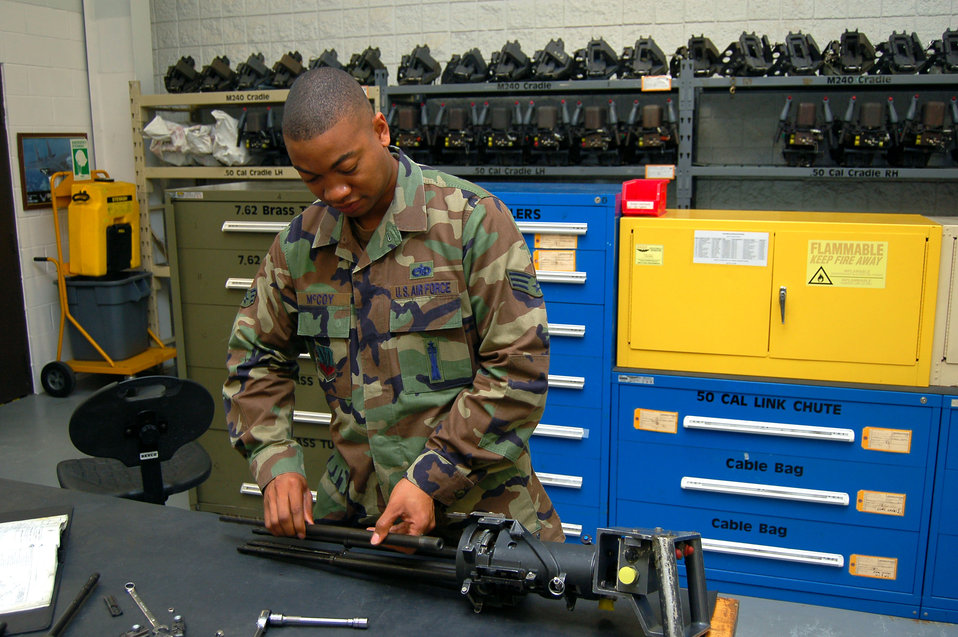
'Abort Court' gets to bottom of mission scrubs

Senior Airman Derrick McCoy removes the barrels from a 7.62mm GAU-2 minigun during an inspection March 12 at Moody Air Force Base, Ga. Airman McCoy is a 723rd Aircraft Maintenance Squadron armament systems journeyman.